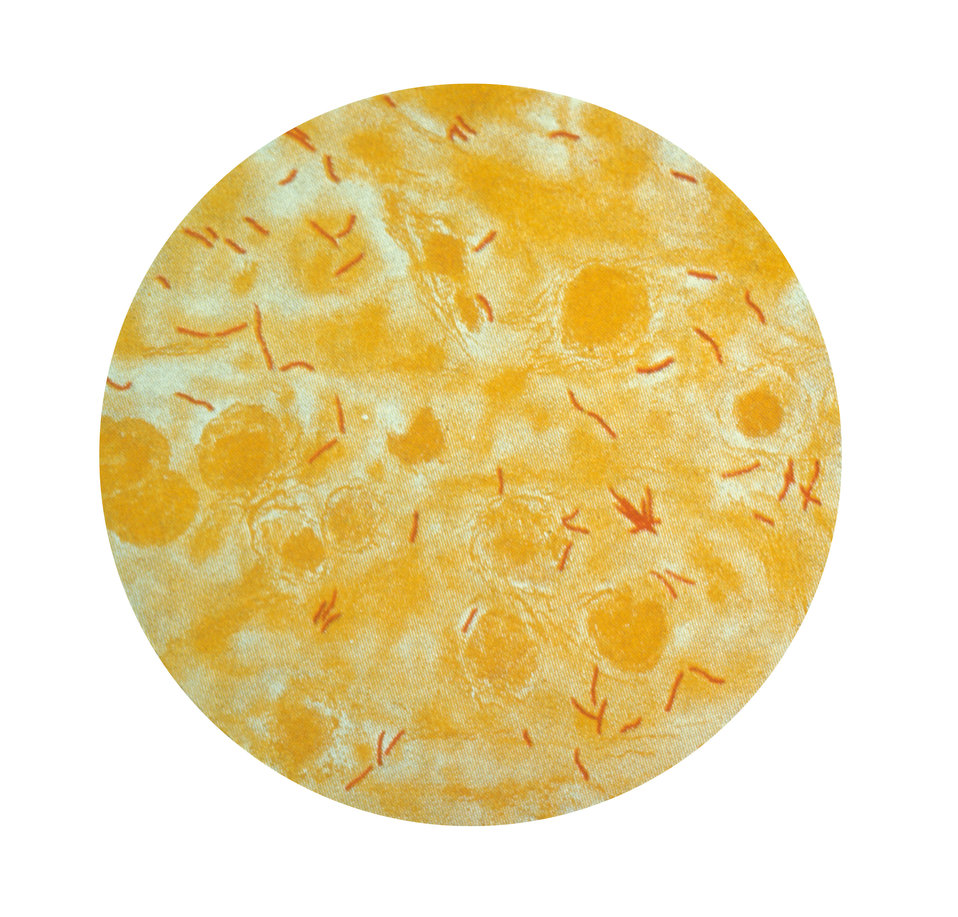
Photomicrograph of a sputum sample containing Mycobacterium tuberculosis.